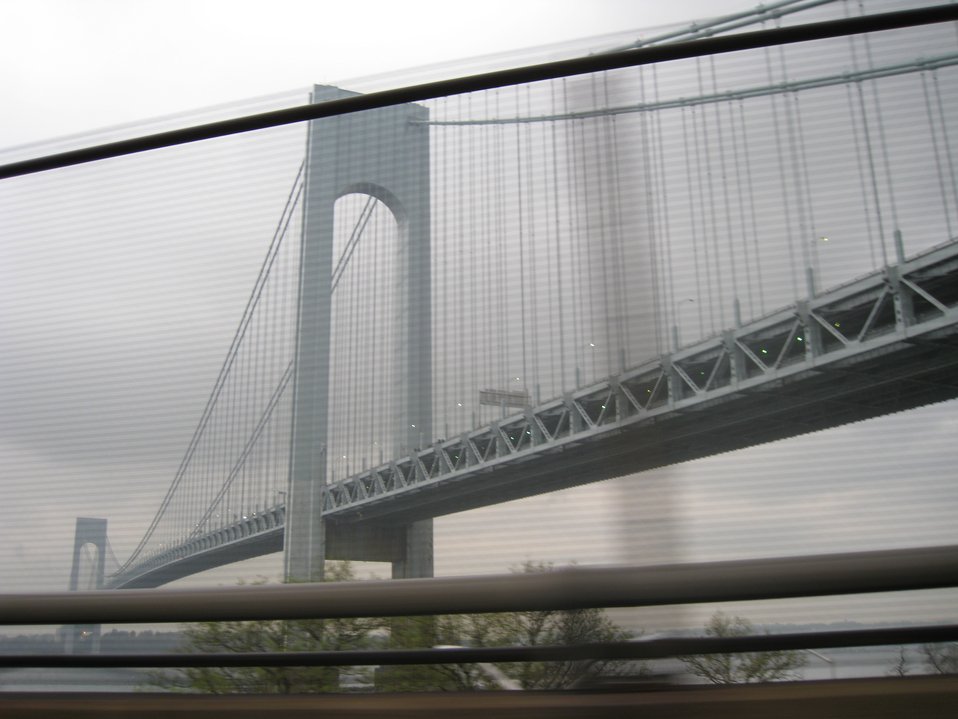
The Verrazano Narrows Bridge as viewed from the Shore Parkway on Long Island.